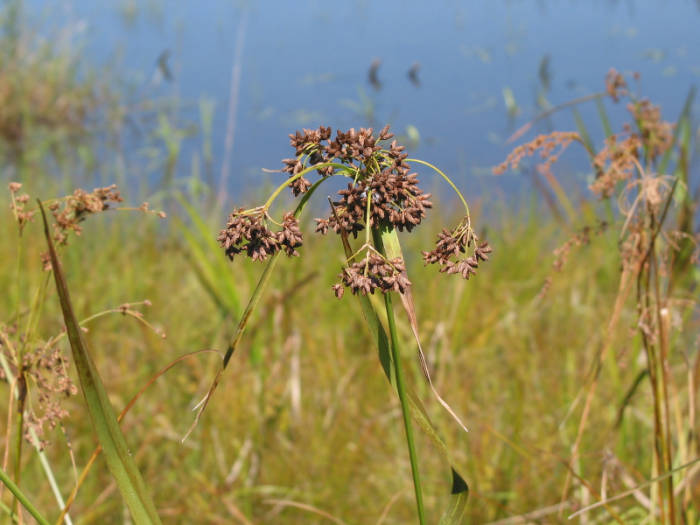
Scirpus